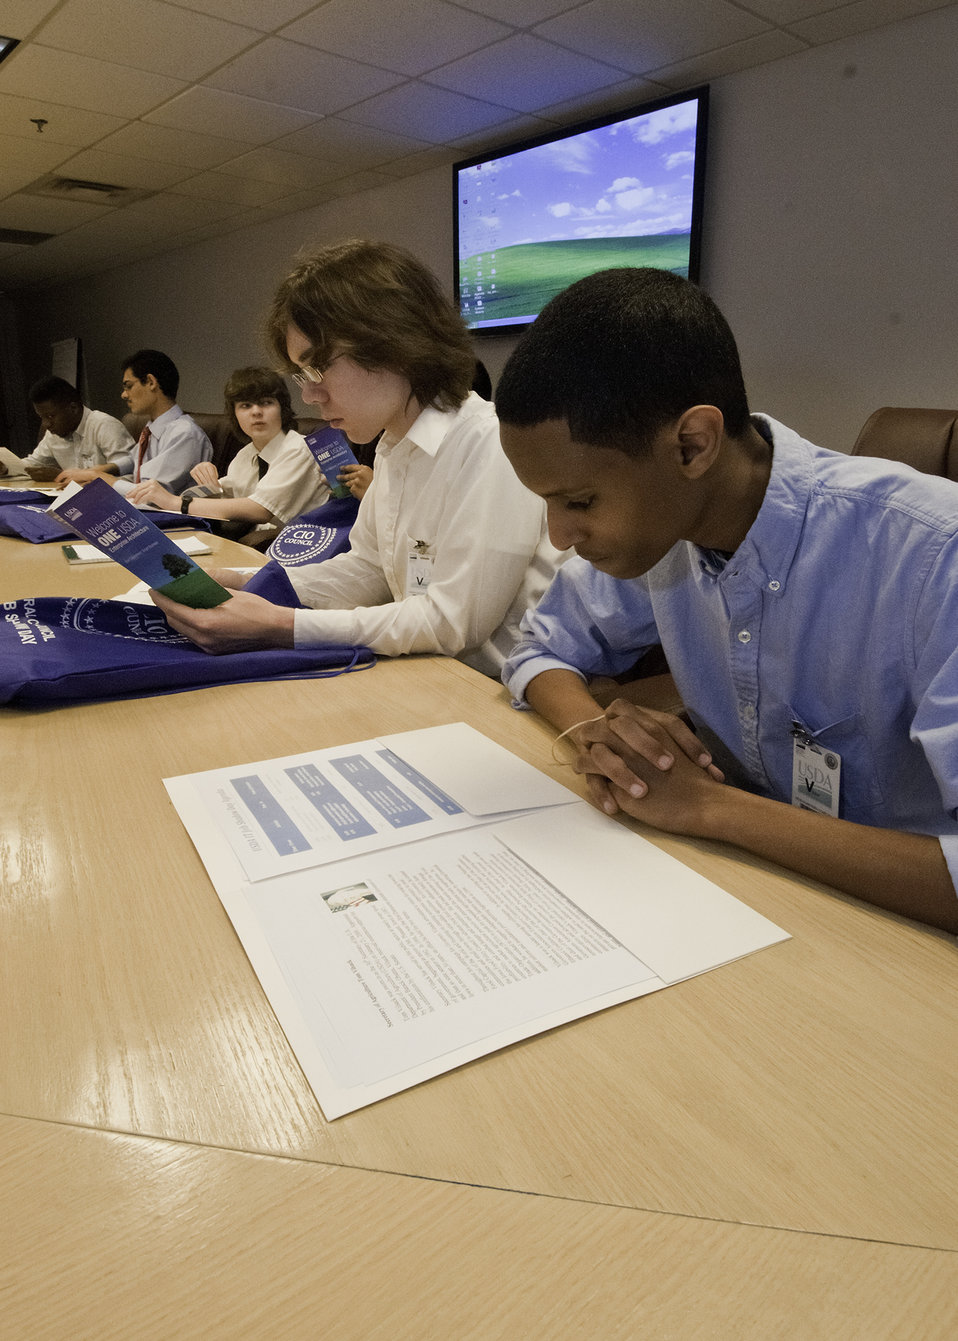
Left to right, Nebil Maeruf, David Bellomy, Patrick Lehan, Moshin Khan Springbrook High School, Silver Spring, Maryland and David Thompson, Eleanor Roosevelt High School, Greenbelt, Maryland, members of the Academy of Information Technology review literature for the United States Department of Agriculture (USDA), Information Technology Job Shadow Day on Wednesday, April 13, 2011. USDA holds an Information Technology Job Shadow Day annually. It is an opportunity for students from local high schools to learn the breadth and depth of information technology at USDA and how it is applied the department. Students toured the Network Operations Center, the Badging Office and had a lecture on geospatial technology.